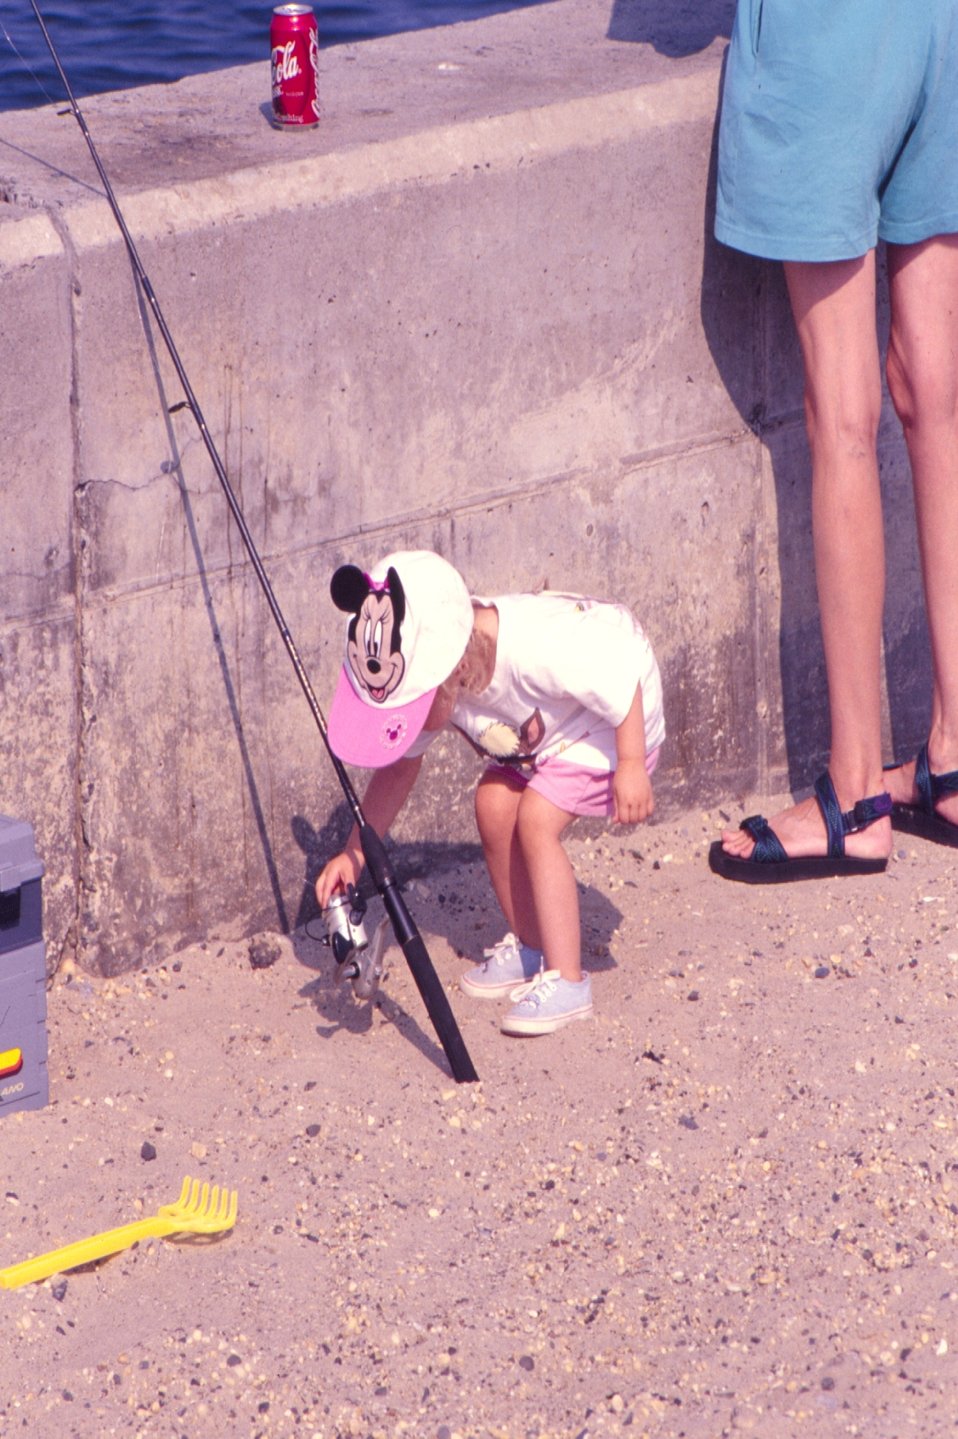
A youthful angling enthusiast checks out the action on her spinning reel. Point Pleasant, NJ.